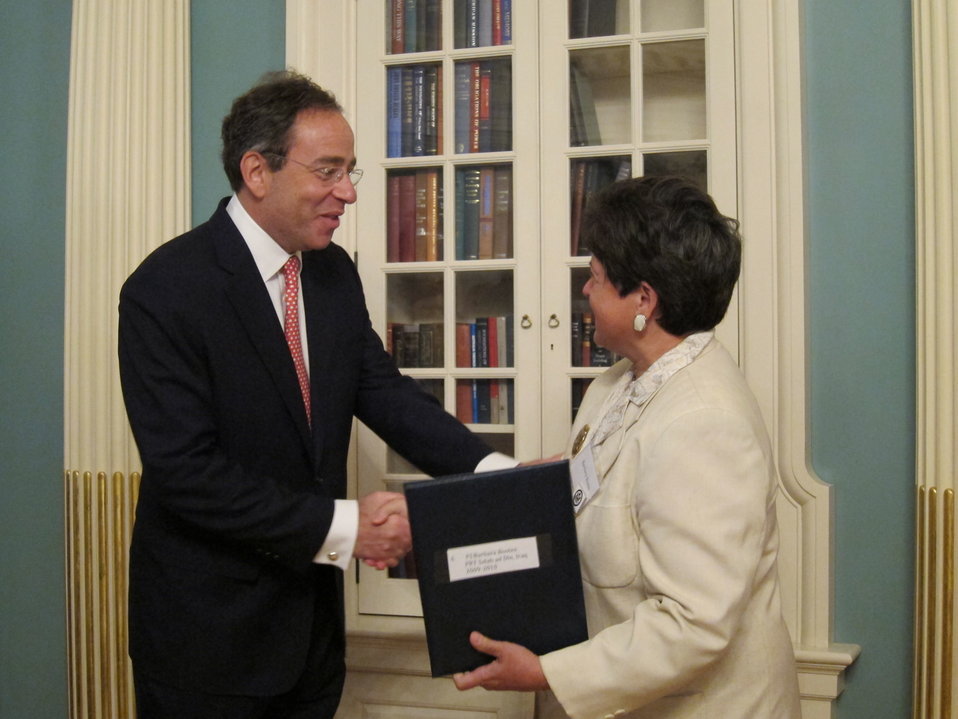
Deputy Secretary Nides Presents an Expeditionary Diplomacy Award to Foreign Service Officer Barbara Ann Bootes

U.S. Deputy Secretary of State Thomas R. Nides presents an Expeditionary Diplomacy Award to Foreign Service Officer Barbara Ann Bootes at the Department of State in Washington, D.C. on June 28, 2012. Barbara was honored for her service working at a provincial reconstruction team in Salad ad Din, Iraq from 2009 to 2010.